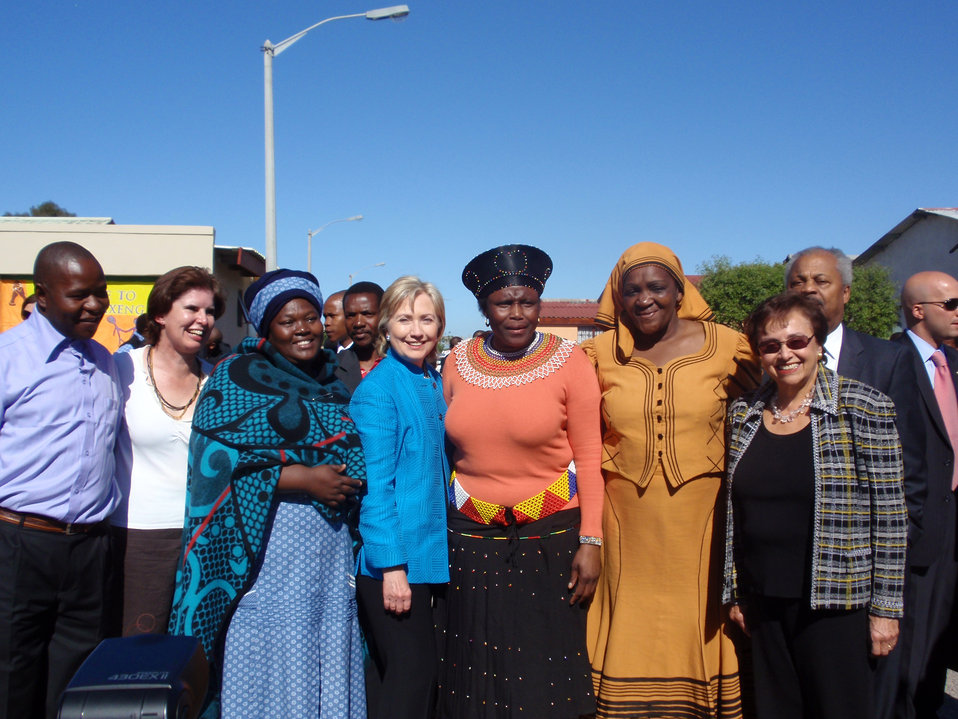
Secretary Clinton Visits Victoria Mxenge Housing Development

U.S. Secretary of State Hillary Rodham Clinton and U.S. Congresswoman Nita Lowey pose with people from Victoria Mxenge Housing Development in Cape Town, South Africa August 8, 2009.